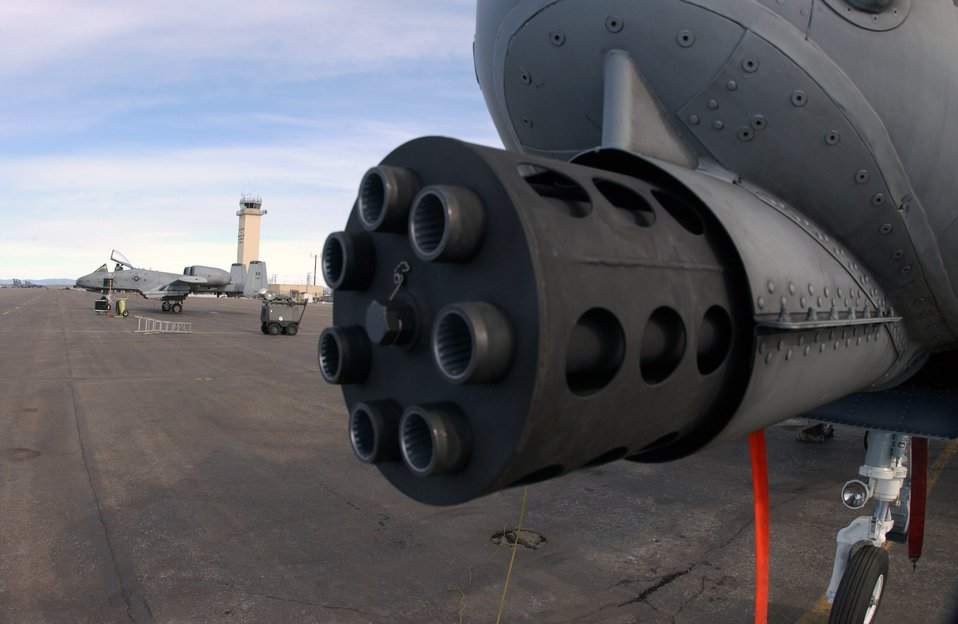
Aug. 9 airpower summary

On the nose of the A-10 Thunderbolt II is a 30mm GAU-8 Avenger seven-barrel Gatling gun which is used to pierce heavy armor. A-10s in Afghanistan used the cannon Aug. 9 to provide close air support for troops on the ground.